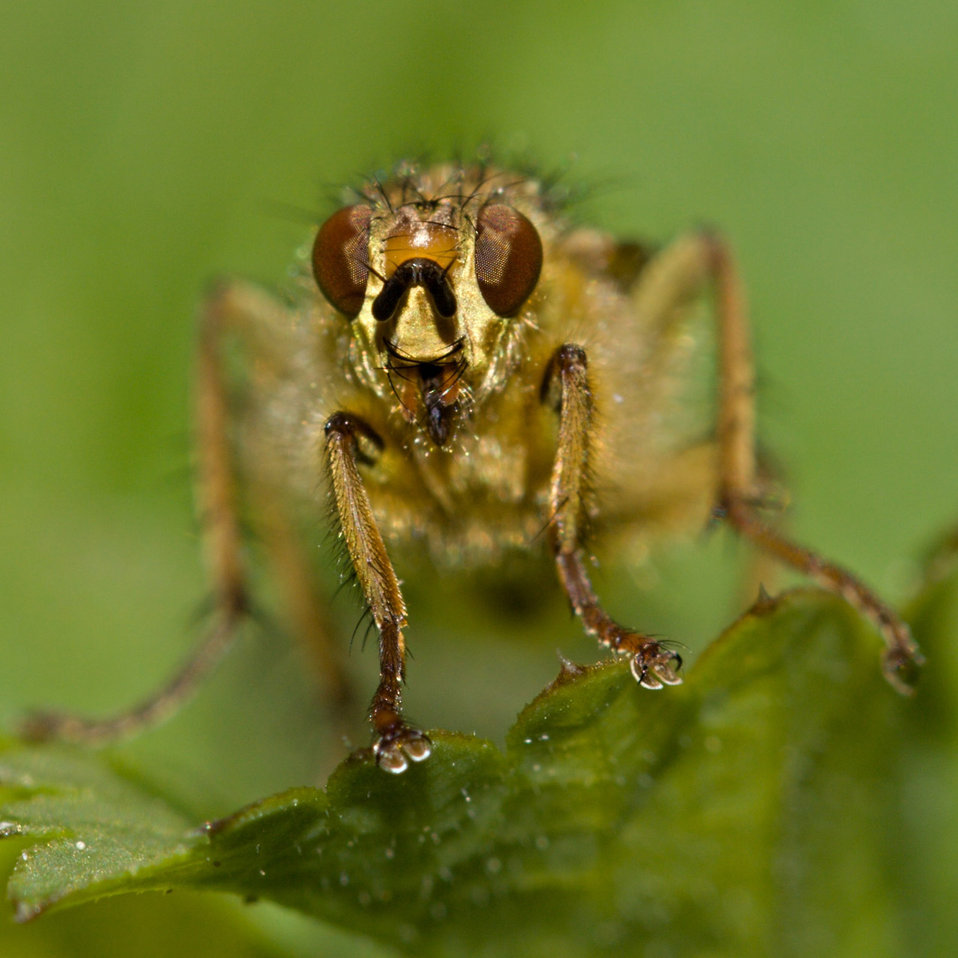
Alien

Some macro picture.